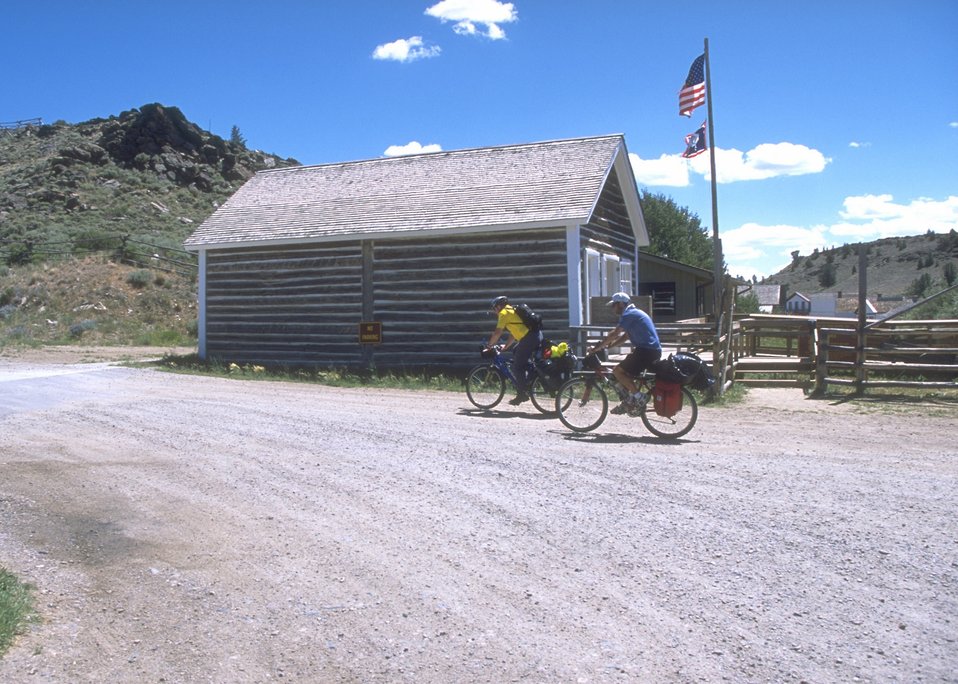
Biking the Continental Divide Trail at South Pass City, Lander Field Office.